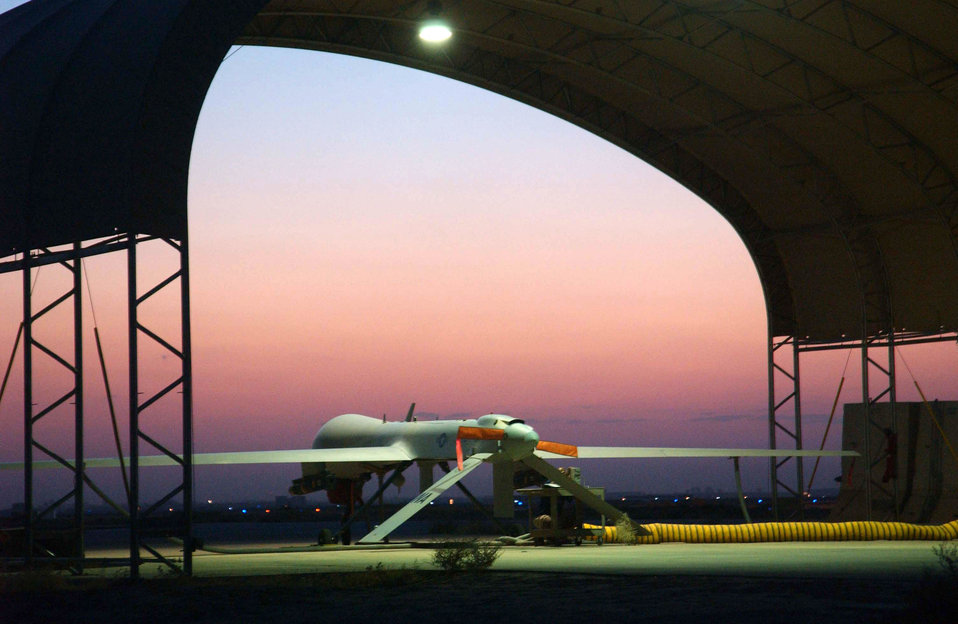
Waiting for the night

An MQ-1 Predator unmanned aerial vehicle basks in a desert sunset at Balad Air Base, Iraq, ready for nighttime operations on Sunday, July 9. Assigned to the 332nd Air Expeditionary Wing, the Predator is the most requested weapons system in the U.S. Central Command theater. Balad is home to the largest Predator operation in the world, providing real time